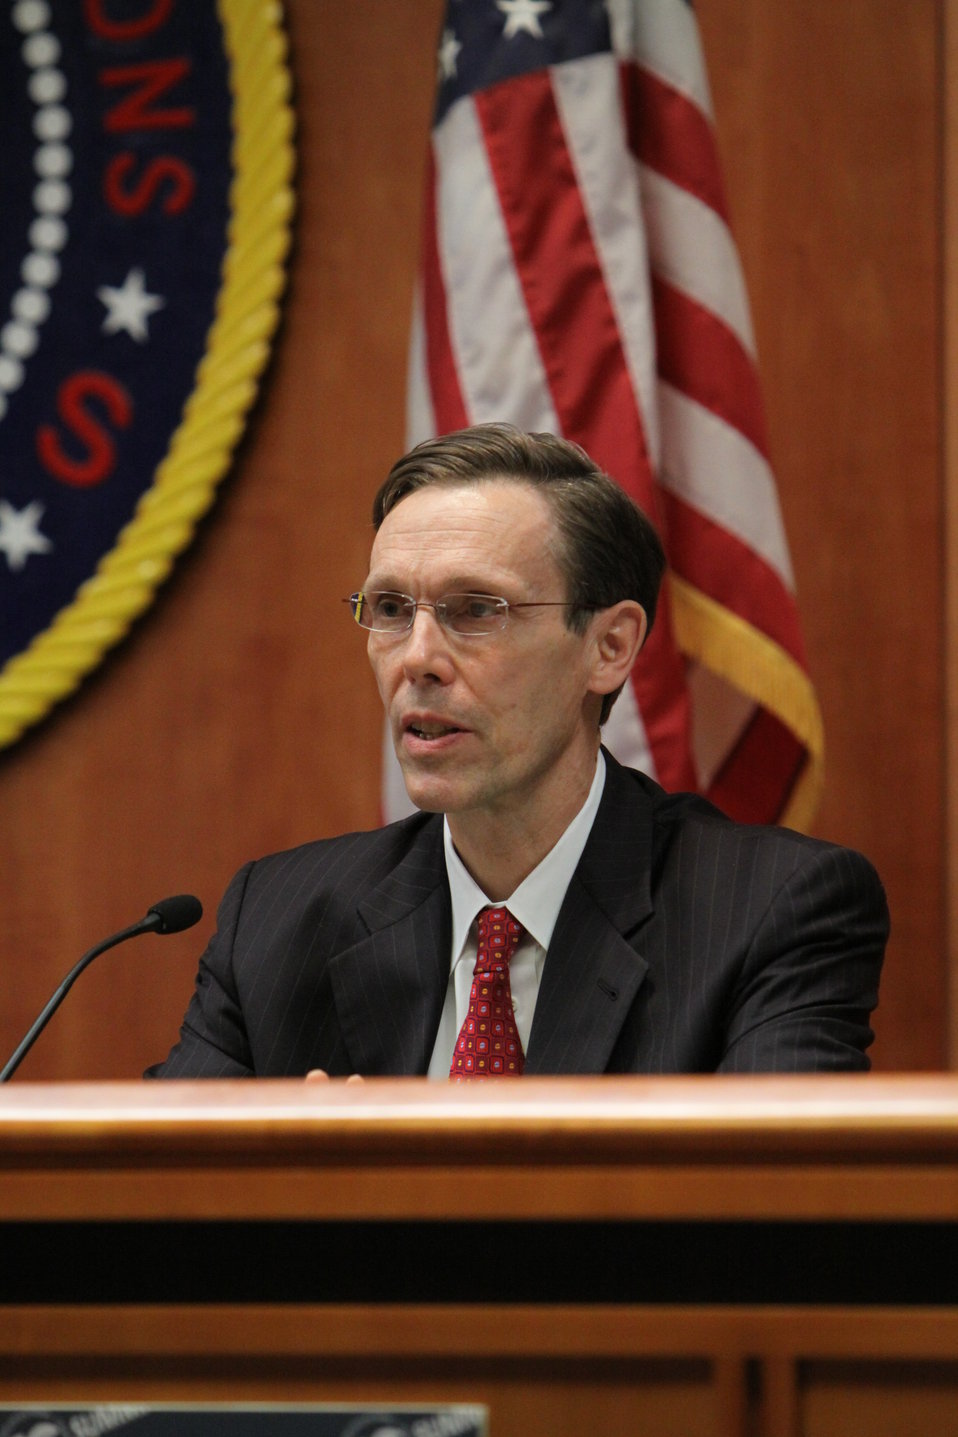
Peter Pitsch, Intel

FCC Policy Solutions to Spectrum Demand Panel